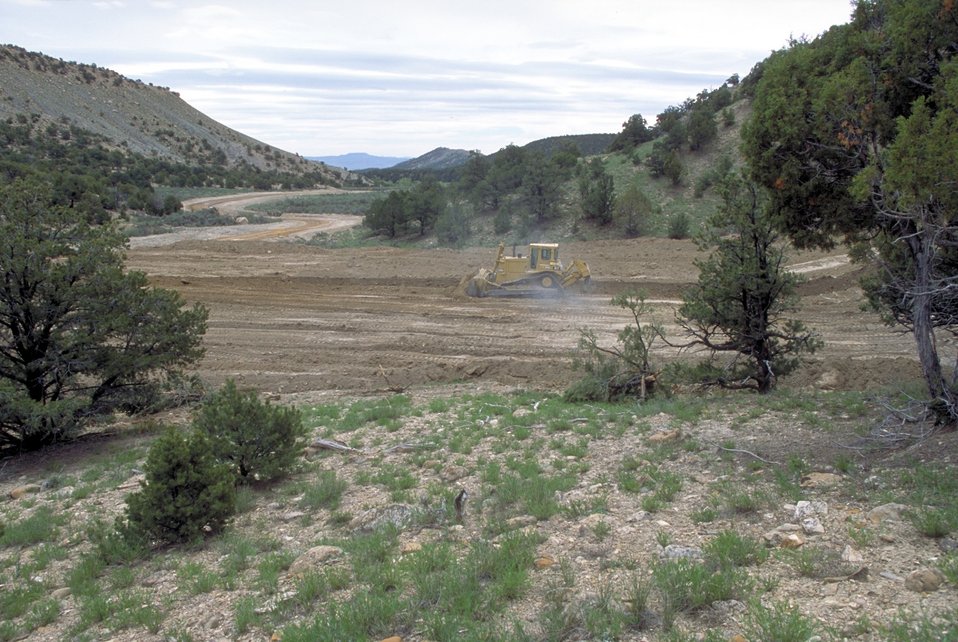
Building a drill pad for coal bed methane production near price, Utah.